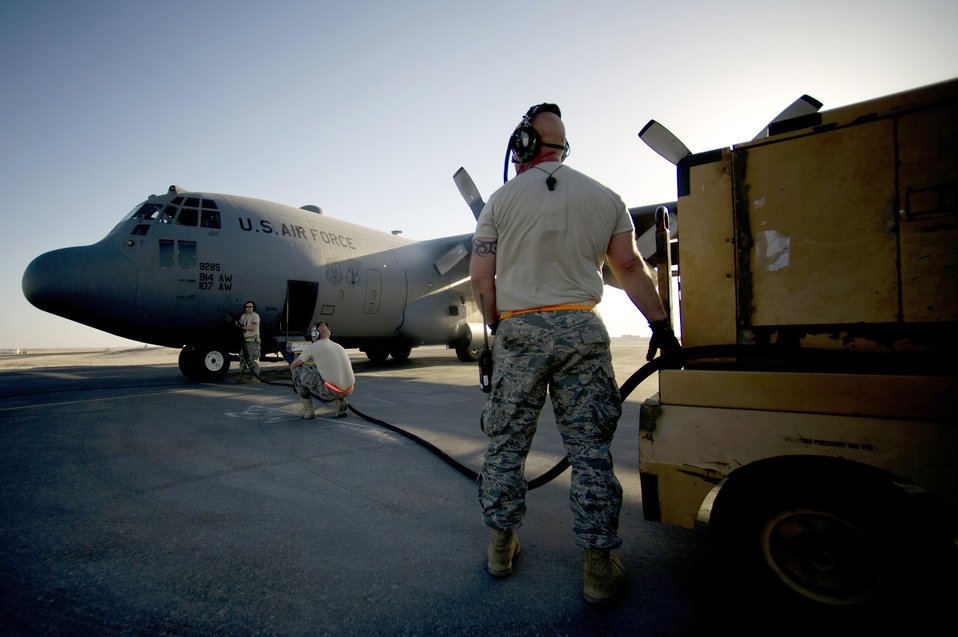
By the book

Members of the 379th Expeditionary Aircraft Maintenance Squadron conduct engine start-up procedures on a C-130 Hercules March 3, 2011, during an air transport mission in support of Operation New Dawn in Iraq.